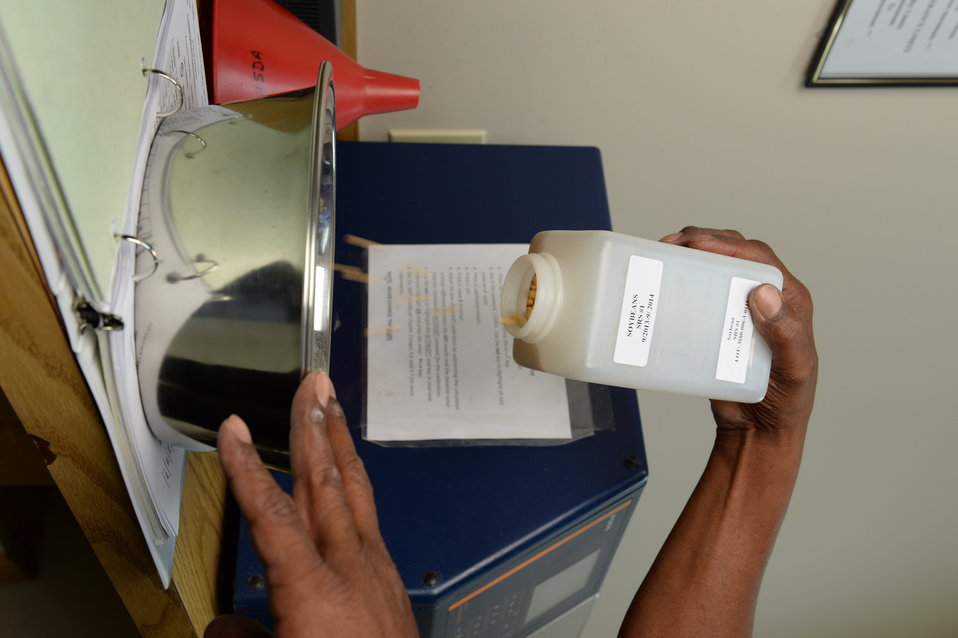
U.S. Department of Agriculture (USDA) Grain Inspection, Packers and Stockyards Administration (GIPSA) Federal Grain Inspection Service (FGIS) employee tests soybean samples at the FGIS inspection laboratory in New Orleans, LA on Monday, Nov. 18, 2013.